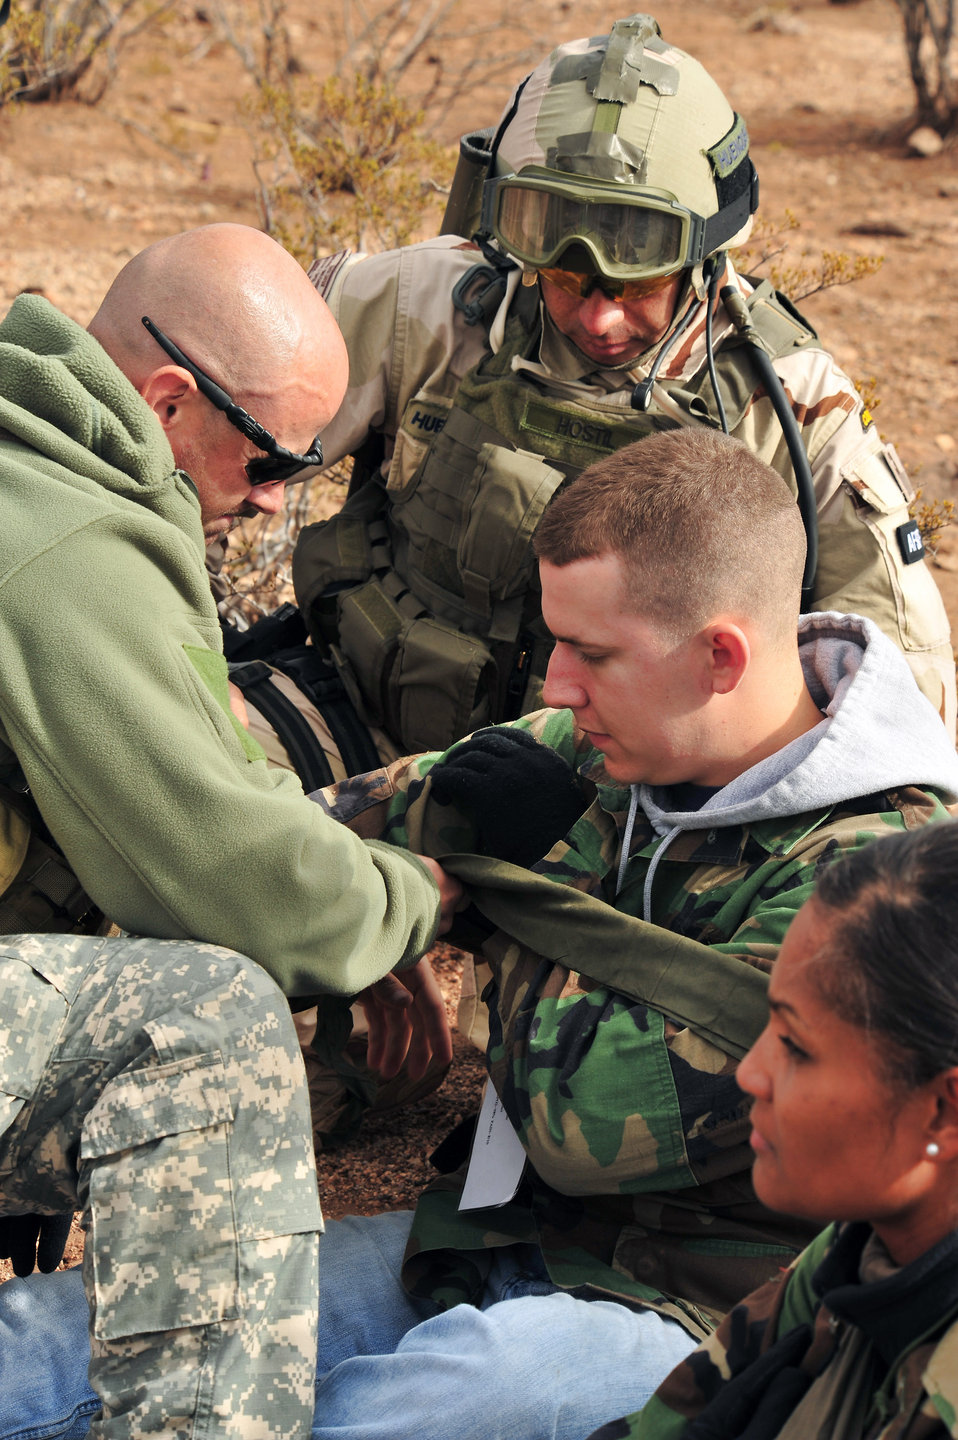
Multinational recovery exercise kicks off at Davis-Monthan

Pararescuemen rescue wounded survivors during a personnel recovery training exercise Dec. 7 at Davis-Monthan Air Force Base, Ariz.. More than 800 ground recovery personnel took part in Angel Thunder 2008, a combat search and rescue exercise.